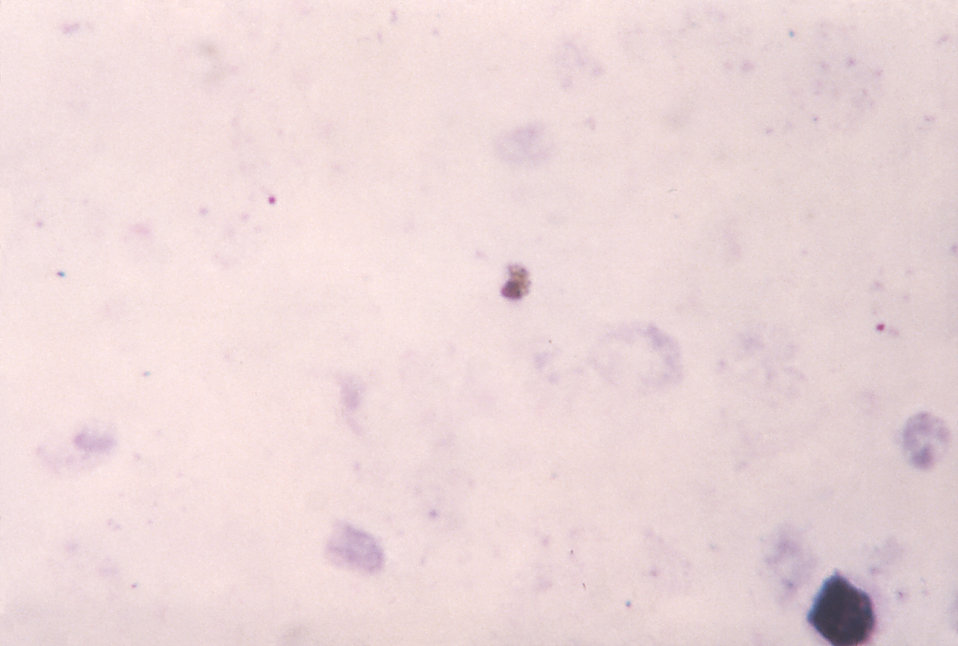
Note the rounded P. falciparum gametocyte with visible chromatin and pigment, but no evident cytoplasm.